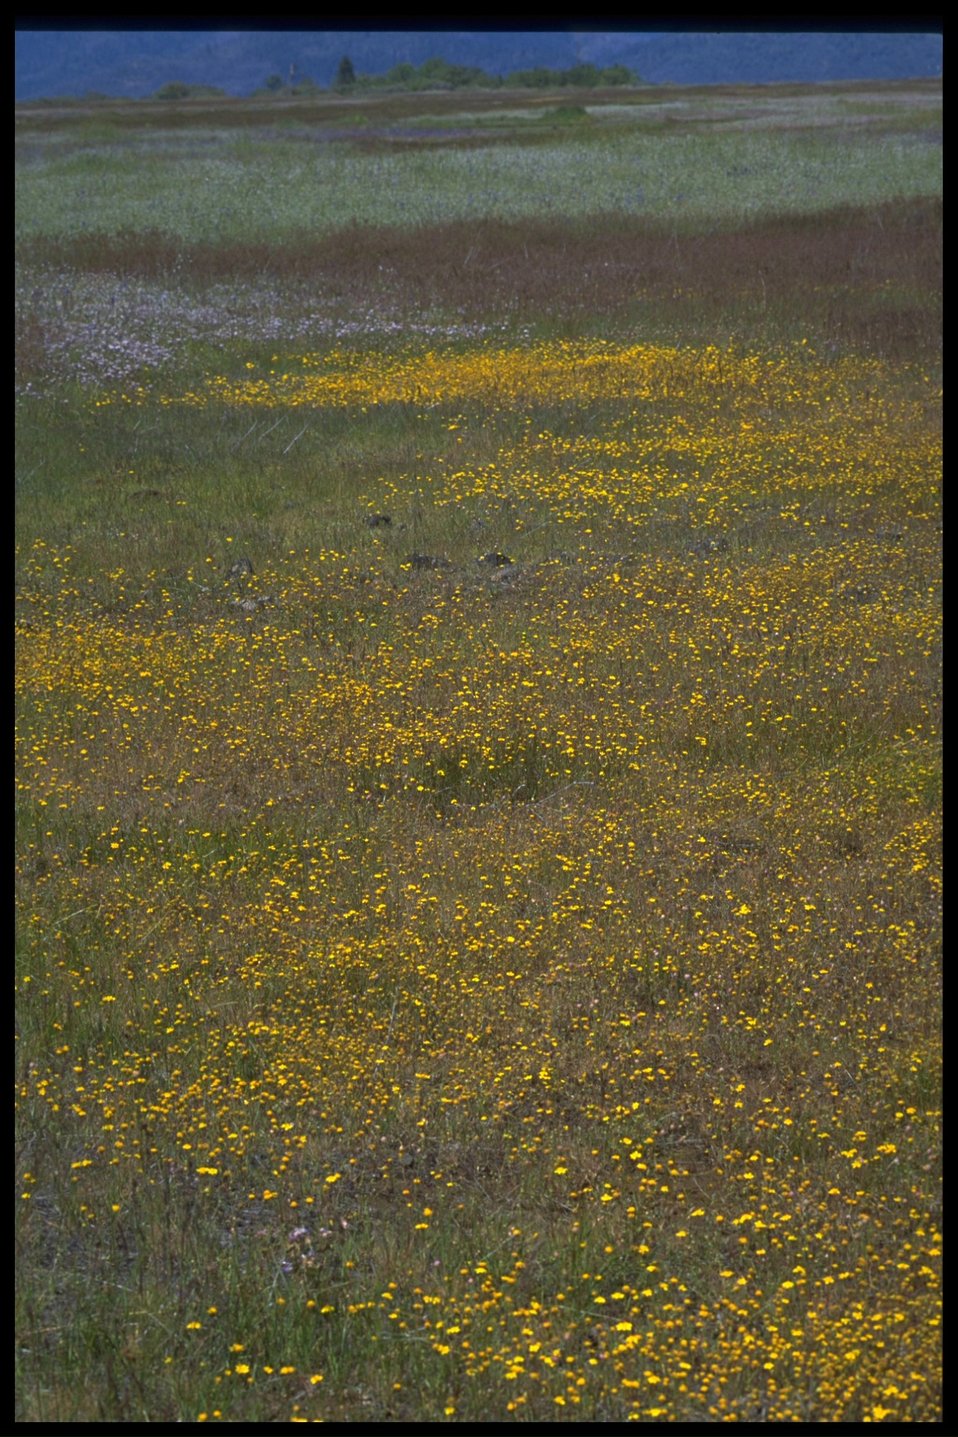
Farshot of Lasthenia californica.